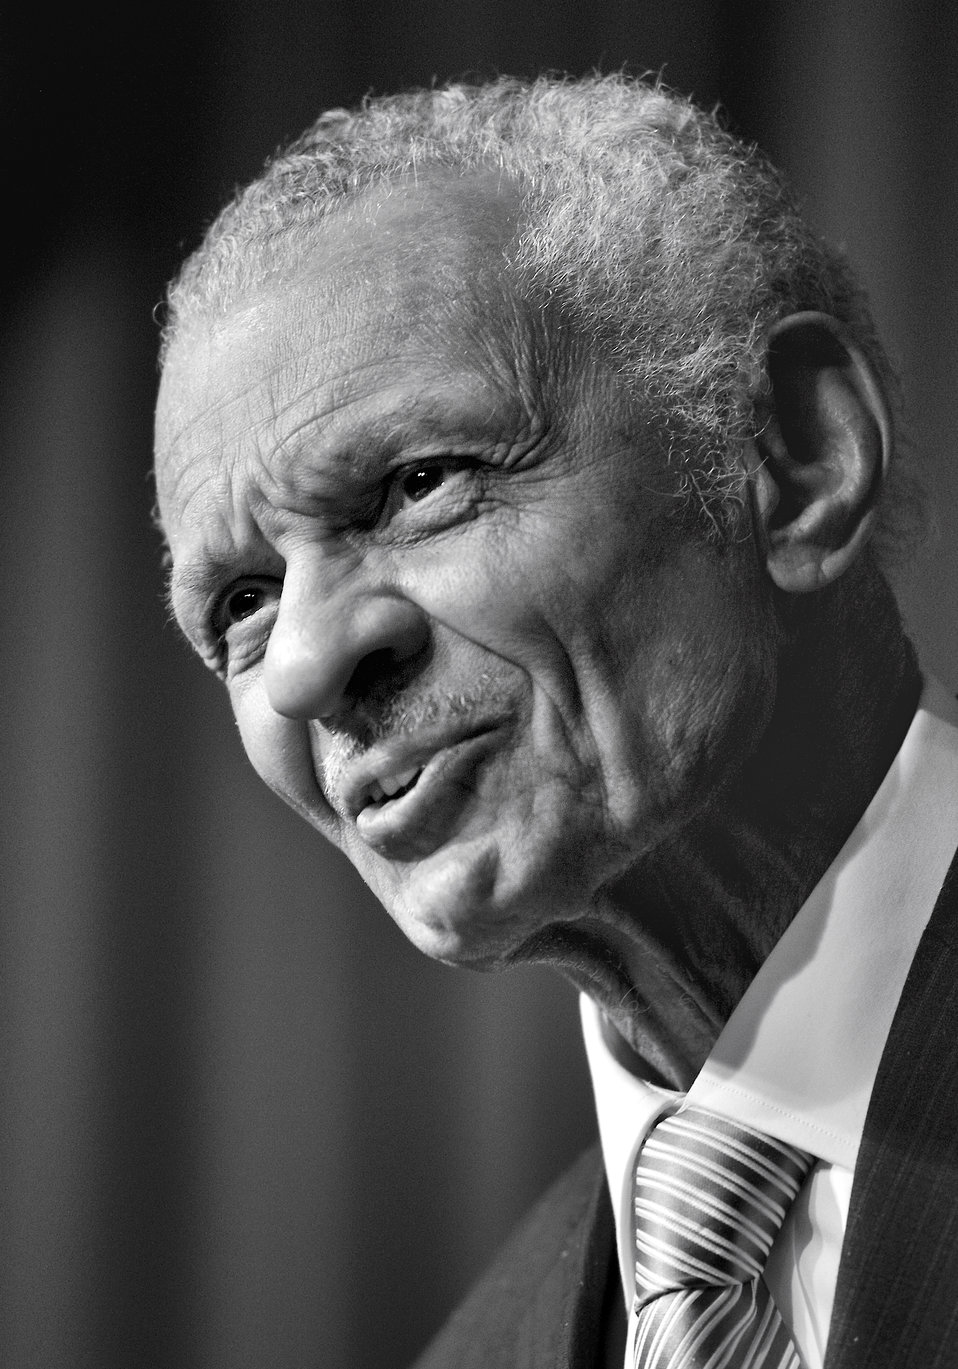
Martin Luther King Jr. Day Celebration at DOE headquarters.